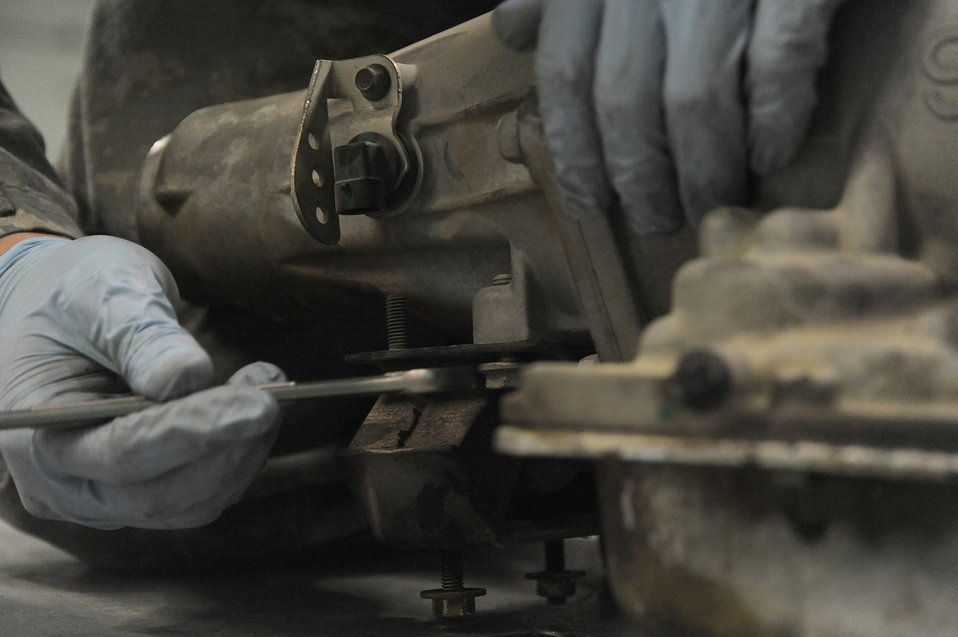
Let's get it started

Senior Airman Michael Jakubec removes a bracket from an old transmission to be used on a new transmission for a Pontiac GTO April 26 at an air base in Southwest Asia. The GTO is used as a chase car to help guide U-2 pilots during takeoffs and landings. Airman Jakubec is a 380th Expeditionary Logistics Readiness Squadron vehicle maintainer deployed from Kadena Air Base, Japan. He is from Spanaway Wash.